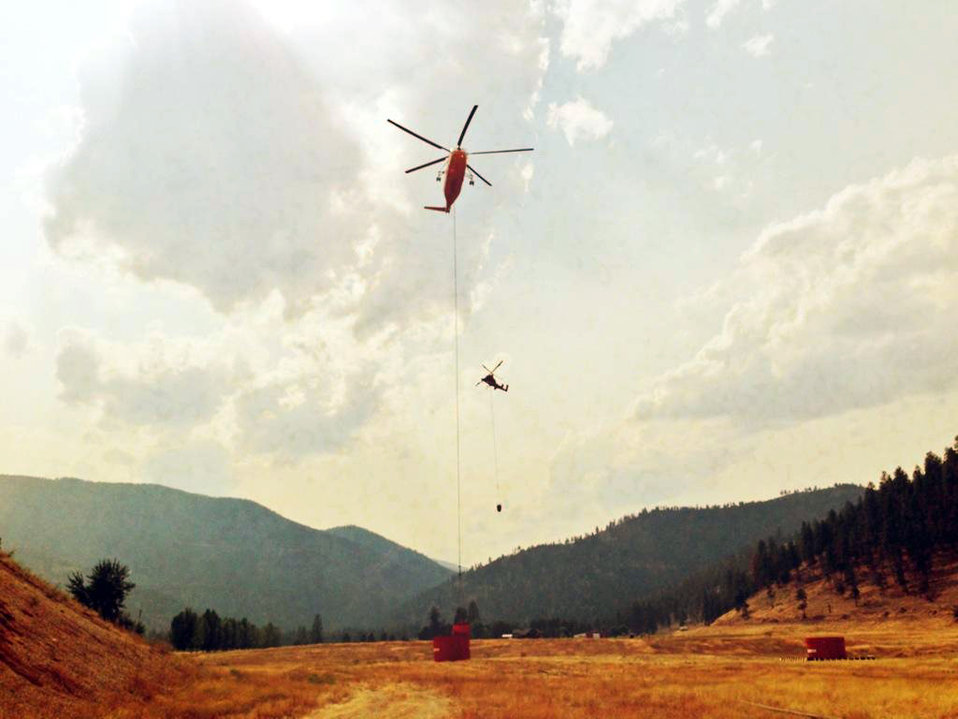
Two helicopters refill tanks at portable water dips at the Lolo Creek Fire. The Lolo Creek Fire in the Lolo National Forest near Lolo, MT began on Aug. 18, 2013 by lightning has consumed approximately 10,892 acres and is 47% contained.